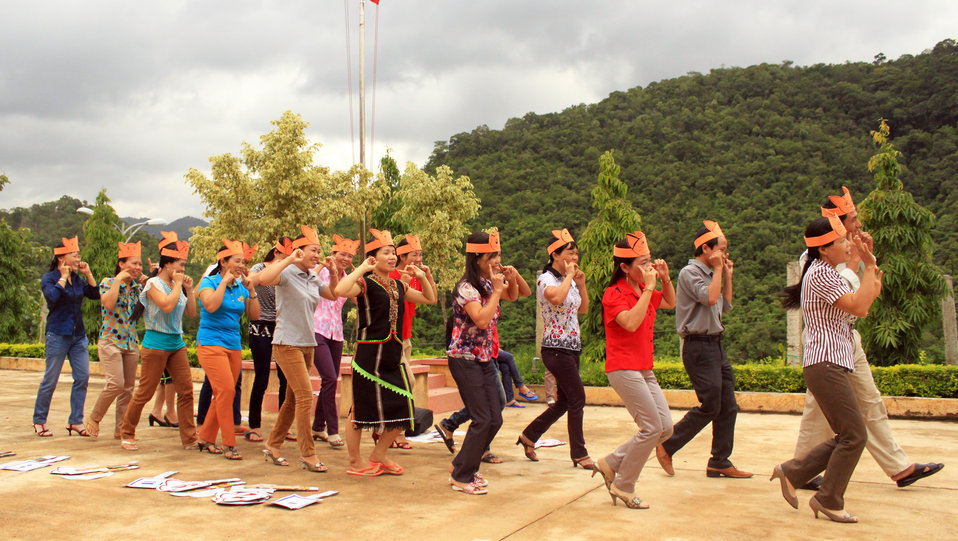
Teachers in Kon Tum practice what they learned from USAID-funded intensive training courses